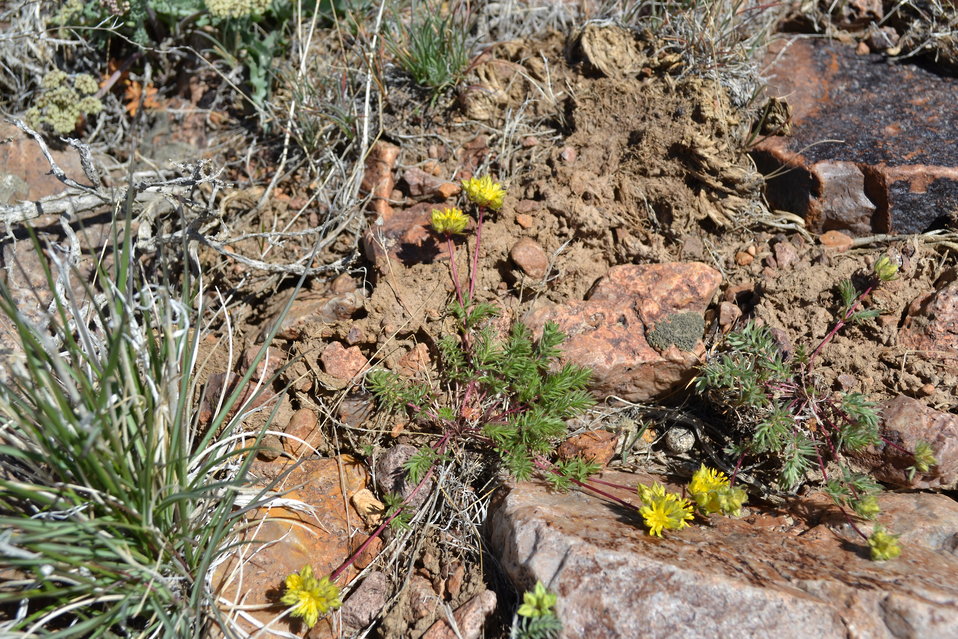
Webber Ivesia

Photo Credit: Sarah Kulpla/USFWS Webber ivesia (Ivesia webberi) is a member of the rose family. It is a low spreading, perennial forb approximately ten inches across with greenish-gray foliage and dark red, wiry stems. The leaves are mostly clustered around the base of the stems, with four to eight pairs of leaflets crowded at the tip, and generally covered with long, silky grayish hairs. Flowering typically begins in May and extends through June. The small bright yellow flowers occur in groups. The whole plant becomes reddish-tinged late in the season. This plant occurs in Washoe and Douglas Counties in Nevada and in Lassen, Plumas, and Sierra Counties in California.